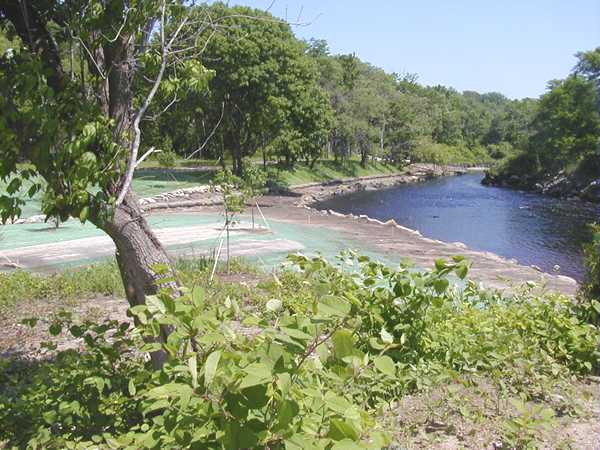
Spring 2001, Early growth of the replanted shoreline